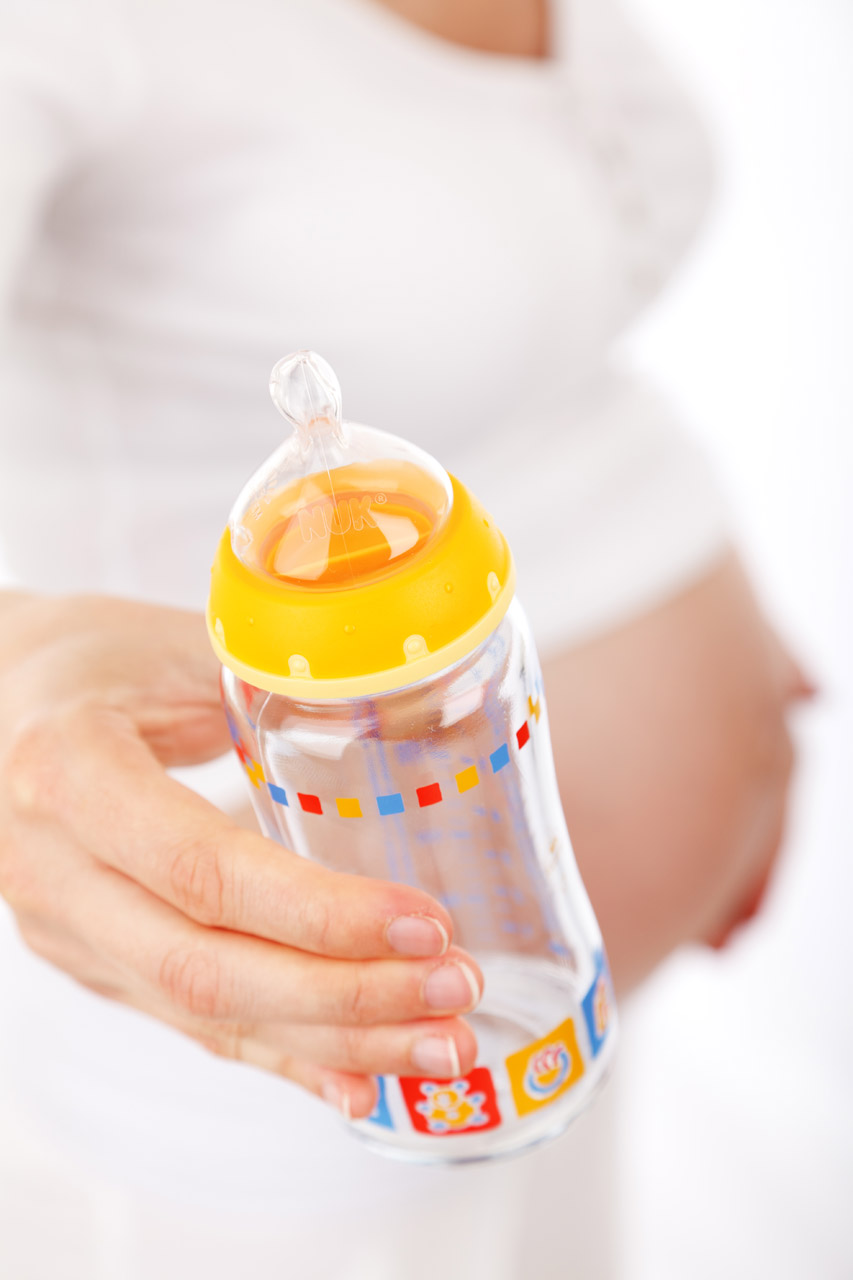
Mother with a feeding bottle

Mother to be with a colorful glass feeding bottle.